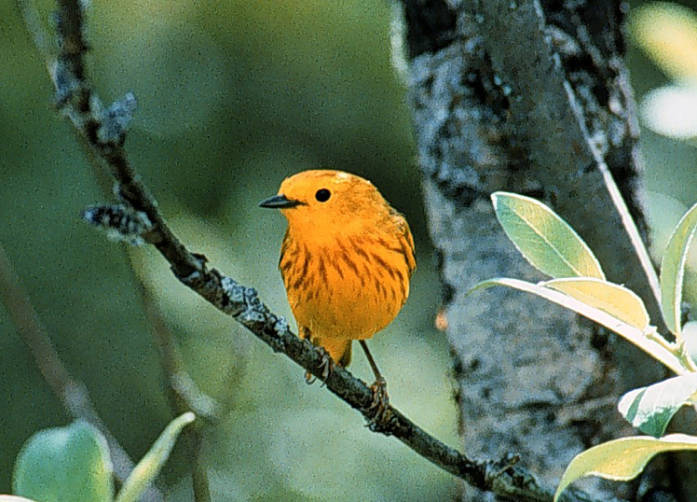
yellow warbler, Yukon Flats National Wildlife Refuge